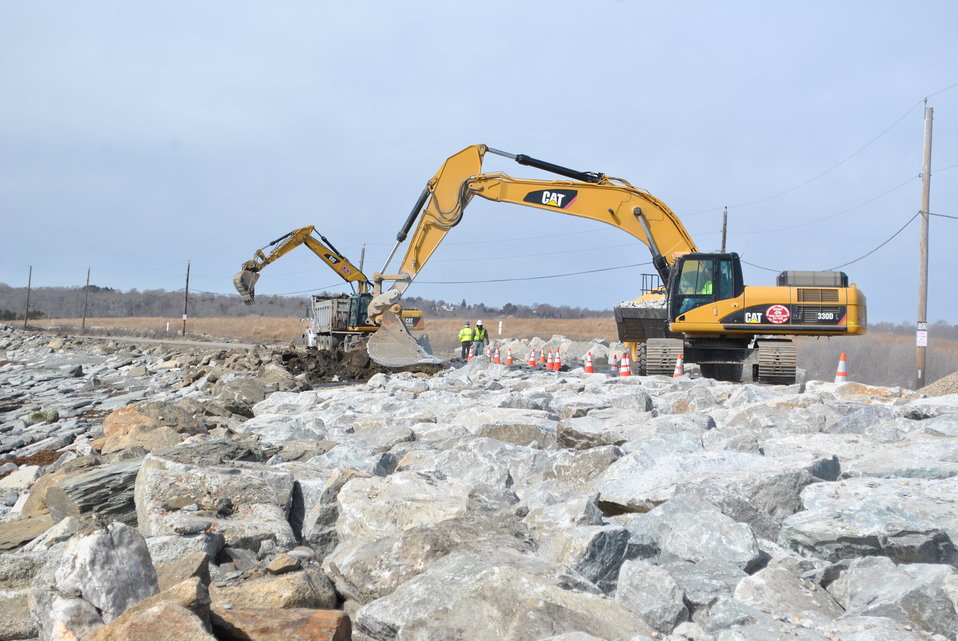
Repairs begin at Sachuest Point Road (RI)

Construction work has begun on the public road that leads to Sachuest Point National Wildlife Refuge. The Rhode Island Department of Transportation is rebuilding about 1,500 feet of Sachuest Point Road and providing armor stone to protect the road from further erosion during storm surges with high surf. The Service and the Federal Highway Administration are funding the repairs, which are expected to be complete in May.